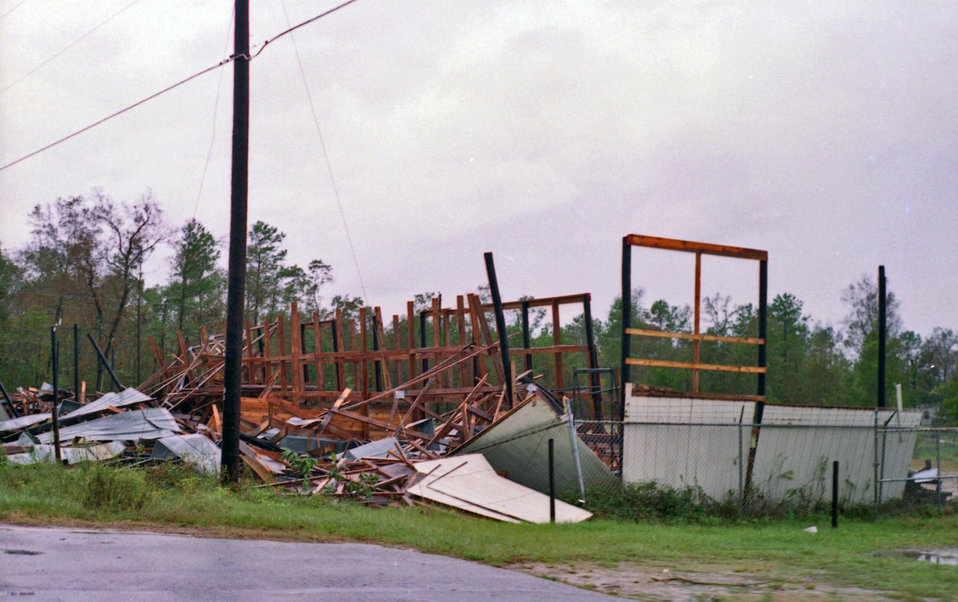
This 1989 photograph depicted a building, which was destroyed after Hurricane Hugo swept through South Carolina on September 21, 1989.